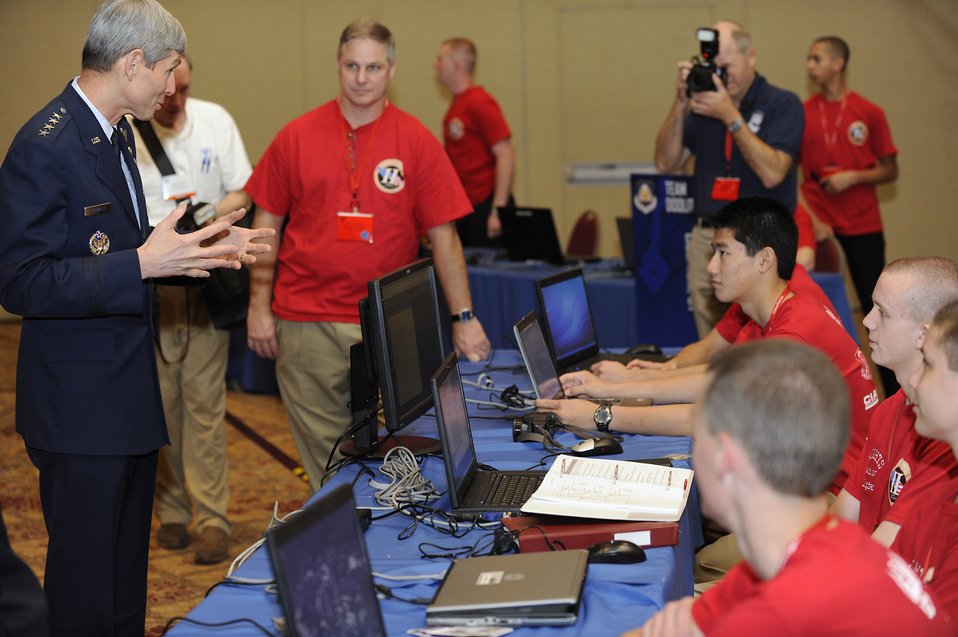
Chief of staff highlights importance of space to Air Force mission

Air Force Chief of Staff Gen. Norton Schwartz meets with a team of high school contestants entered in the CyberPatriot II competition during the Air Force Association's Air Warfare Symposium and Technology Exposition Feb. 18, 2010, in Orlando, Fla. Civil Air Patrol chapters were represented from throughout the nation.